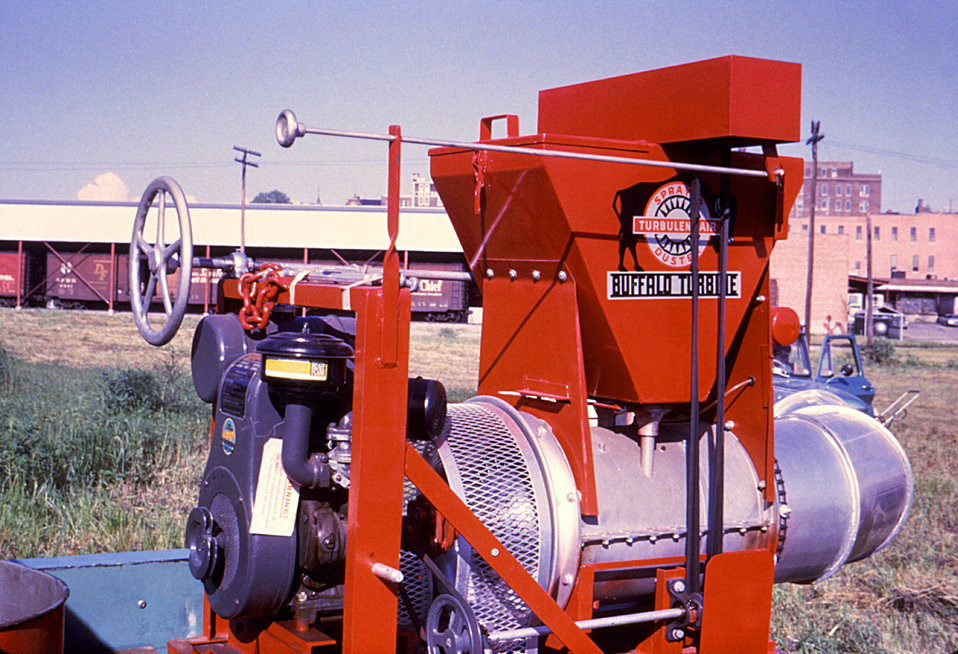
This 1981 photograph depicts a Buffalo Turbine Sprayer/Duster, which was used to distribute powdered insecticides outdoors, primarily amongst agricultural crops in order to control arthropodal pests.